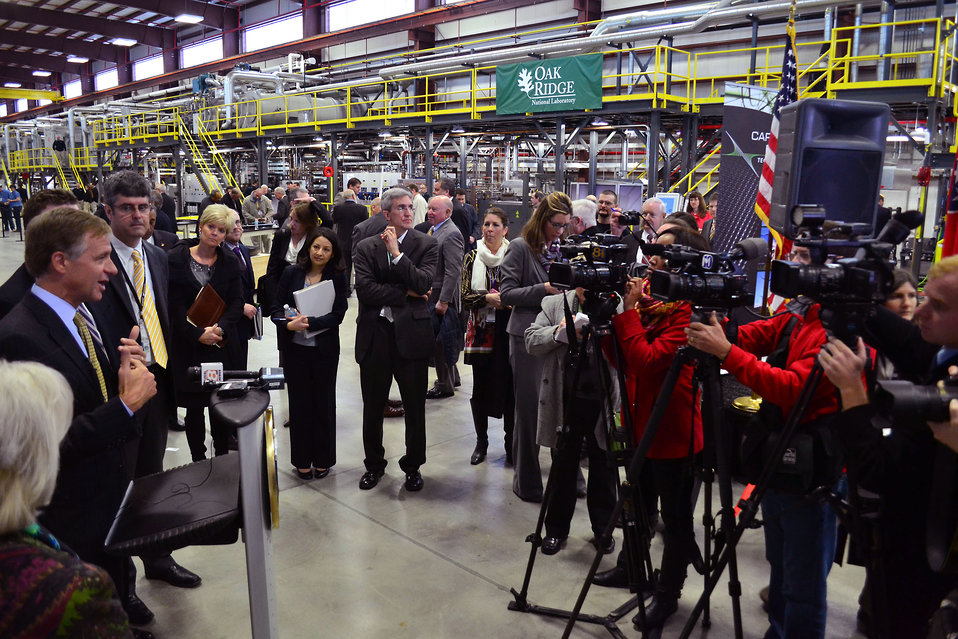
Carbon Fiber Technology Facilty Open House Oak Ridge Tennessee

13-025 DOE photo Lynn Freeny